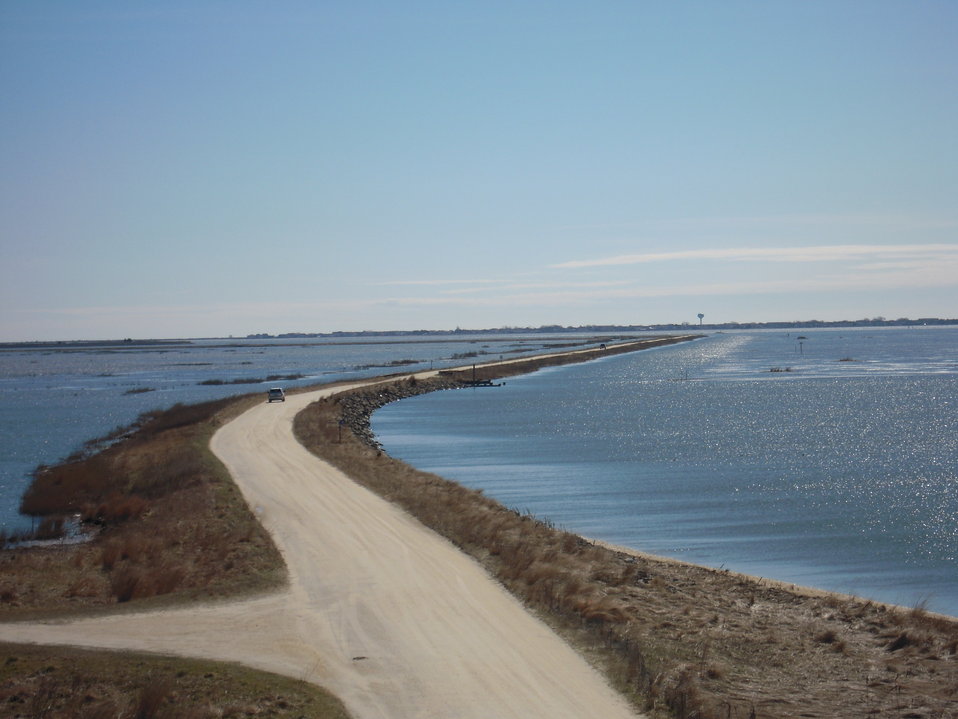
Refuge Road

E.B. Forsythe NWR.